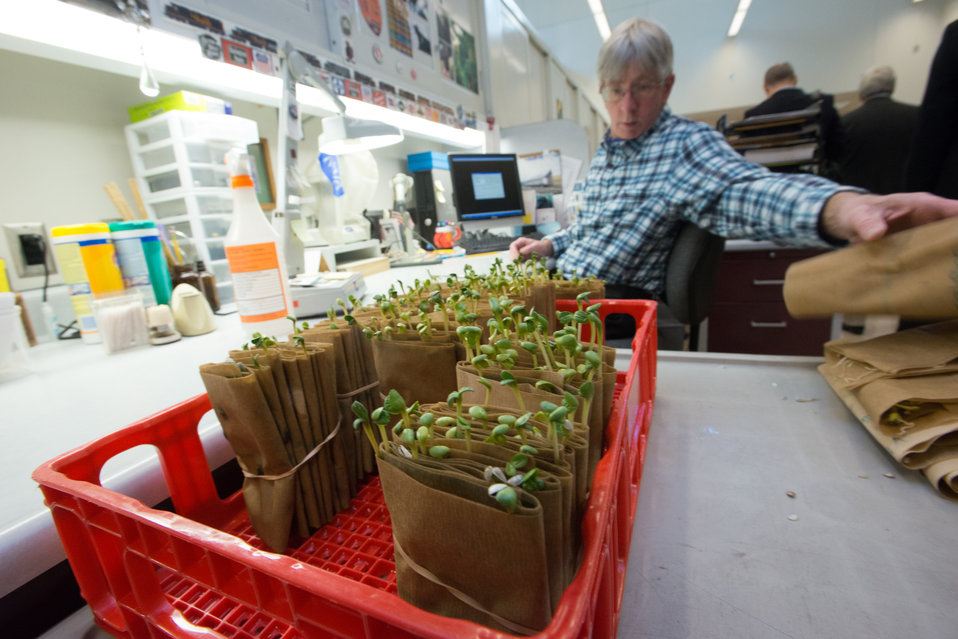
U.S. Department of Agriculture (USDA), Agriculture Research Service (ARS), National Center for Genetic Resources Preservation (NCGRP), Plant and Animal Genetic Resources Preservation Research Unit Biological Science Lab Technician (Plants) Dennis W Moss performs a safflower seed quality evaluation, while in the germination bay of the NCGRP, in Ft. Collins, CO, on Wednesday, Nov. 6, 2013.